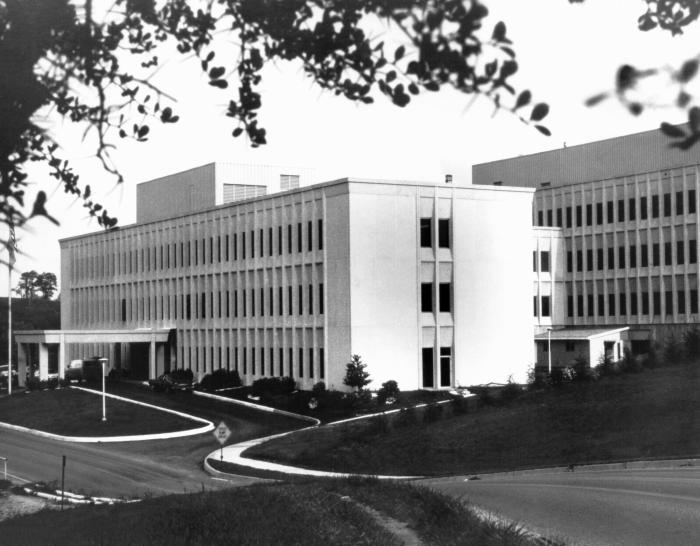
This is the National Institute for Occupational Safety and Health (NIOSH) Building in Morgantown, West Virginia.